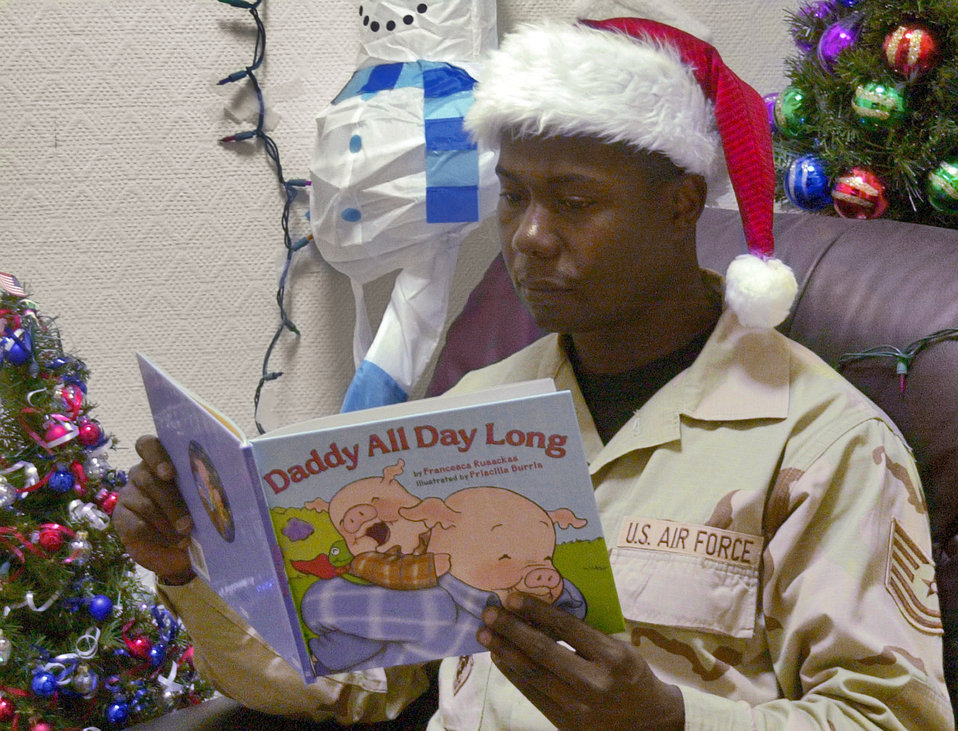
Story time

SOUTHWEST ASIA (AFPN) -- Tech. Sgt. Anthony Reeves reads